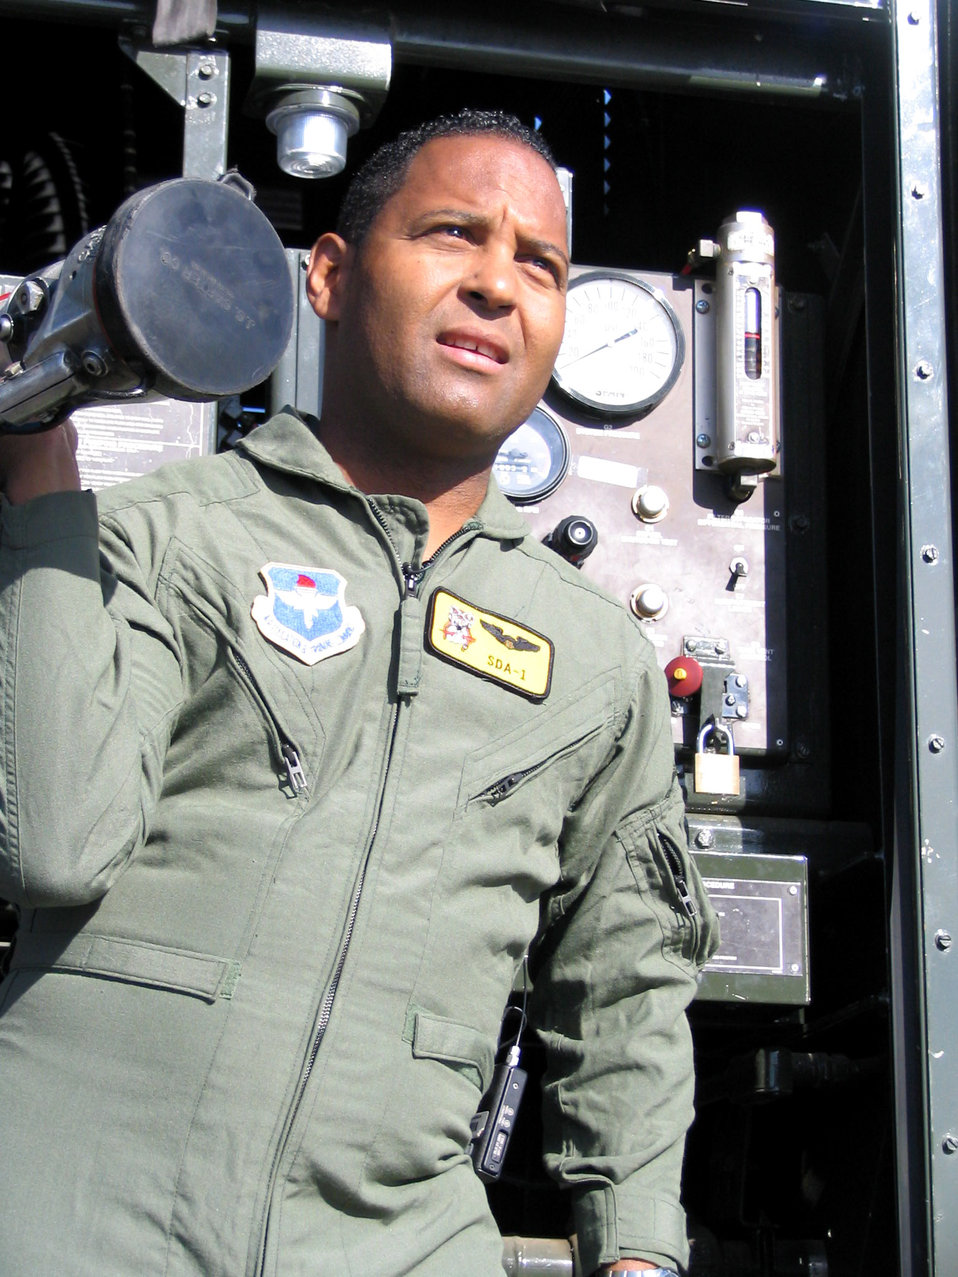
'Que Bien' Air Force Week

Tony Dandrades holds a refueling hose, ready to hook it up to an F-16 Fighting Falcon during his visit March 21 to Luke Air Force Base, Ariz., as part of the Air Force Week. Mr. Dandrades, who served as an honorary commander for the day, is a Univision reporter for the nationally televised